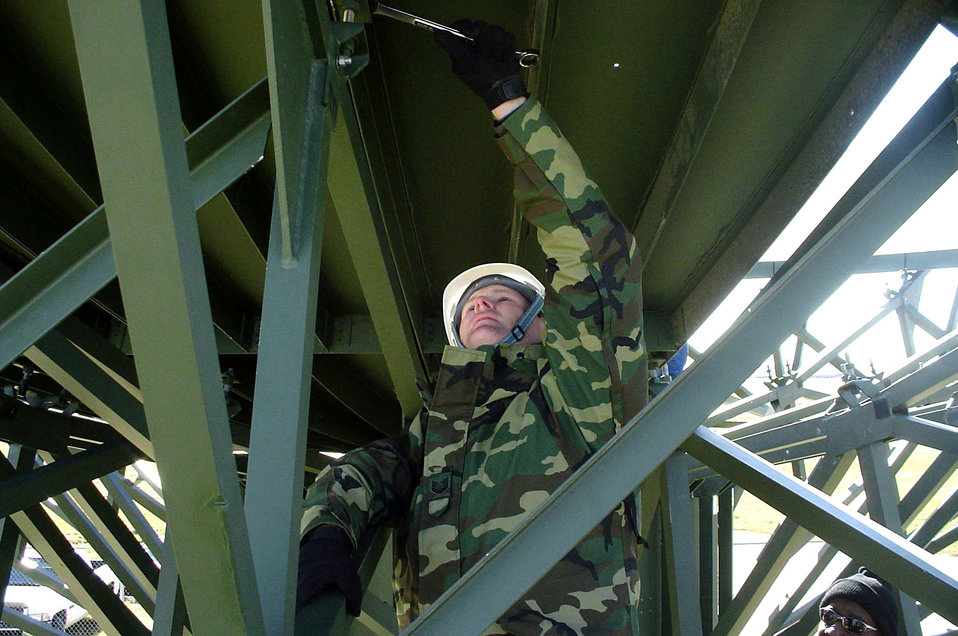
New satellite terminal provides real-time intelligence

LANGLEY AIR FORCE BASE, Va. -- Tech. Sgt. Donald Zehner bolts a satellite dish panel into place here during installation of a Transportable Medium Earth Terminal II satellite communications system. The system will speed the flow of information to warfighters from U-2 Dragon Lady reconnaissance flights. Sergeant Zehner is a satellite communications maintenance technician assigned to the 10th Intelligence Squadron.